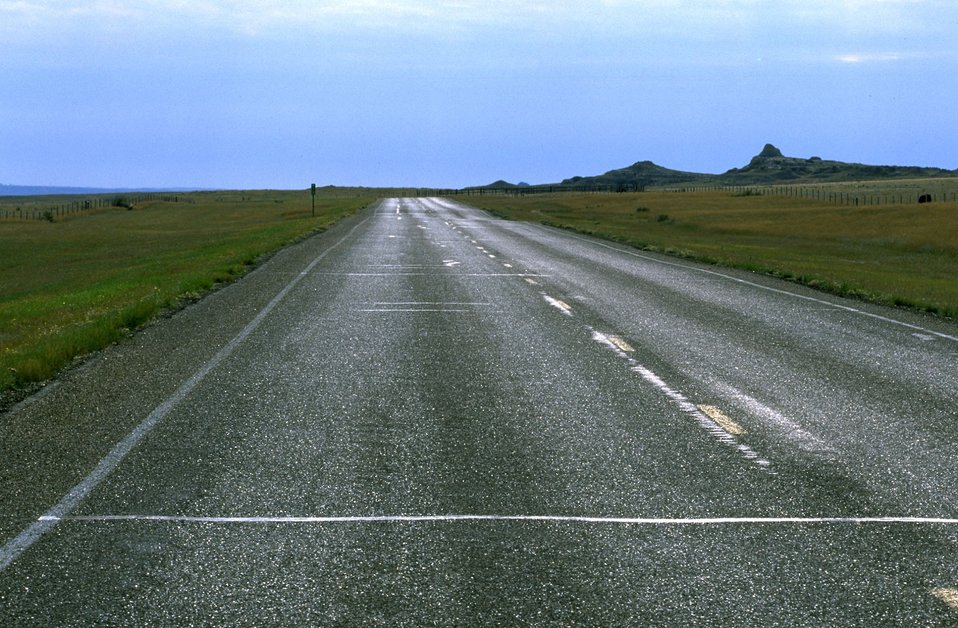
Highway through the Big Sky Back Country Byway